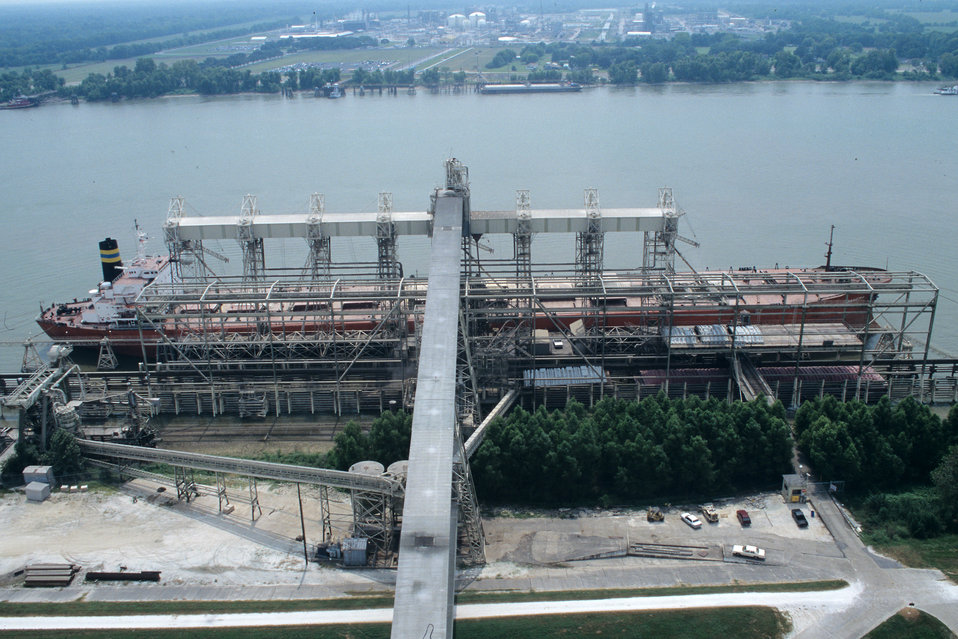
An export ship loads rice dockside at the Bunge Grain Facility in Destrehan, LA on Sept. 1, 1996. The U.S. Department of Agriculture (USDA) Grain Inspection, Packers and Stockyards Administration (GIPSA) offers inspection services for rice upon request on a fee basis for both domestic and export shipments. Rice inspection services are divided into two basic types: inspection for grade or factor analysis without grade. Inspection for grade involves analyzing the sample according to the quality factors listed in the Official U.S. Standards for Rice and certifying the applicable numeric grade designation, the quality factors responsible for the grade assignment, and any other quality factors the customer requests. Factor analysis involves the analysis of quality factors requested by the applicant for service without the certification of an applicable numeric grade designation. Factors requested by applicants might include free fatty acid, total oil and free fatty acid, stain as a count, broken in brown rice, false smut, and aflatoxin. Official inspections result in the issuance of an official certificate, which reports the grade of the rice. U.S. and international buyers rely on official USDA inspection certificates to provide accurate, official descriptions of the grade, class, and condition of the inspected rice. Official certificates are receivable by all offices and all courts of the United States as prima facie evidence of the truth of the statements stated thereon.